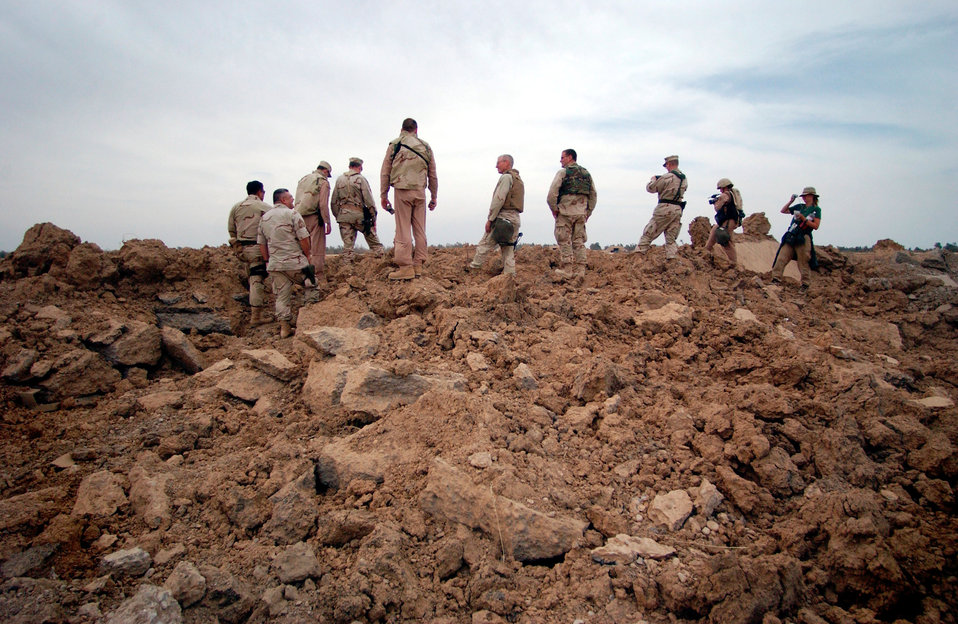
Major crater

OPERATION IRAQI FREEDOM -- American servicemembers examine a crater in the taxiway at Baghdad International Airport on April 18. Among the crowd were two leaders in Operation Iraqi Freedom's Combined Forces Air Component Command: Maj. Gen. Walter Buchanan, deputy commander, and Maj. Gen. George N. Williams, director of mobility forces. Buchanan and Williams toured the airport and visited with servicemembers during their stay. The airport is a primary base of operations for U.S. troops, cargo and humanitarian airlift in Operation Iraqi Freedom.